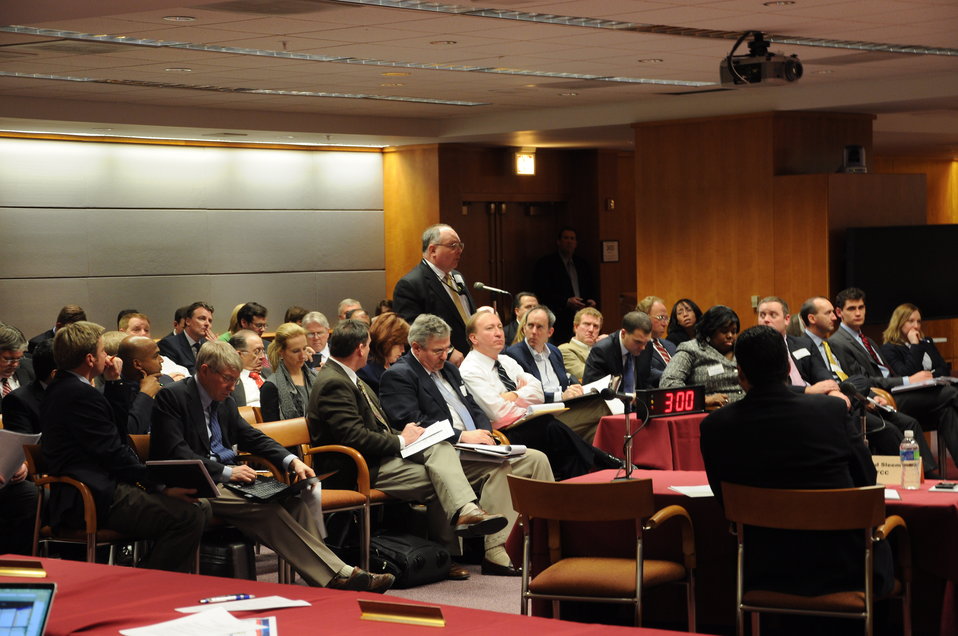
FCC ERIC Public Safety Workshop

ERIC: Public Safety Workshop; Commission Meeting Room; March 02, 2010